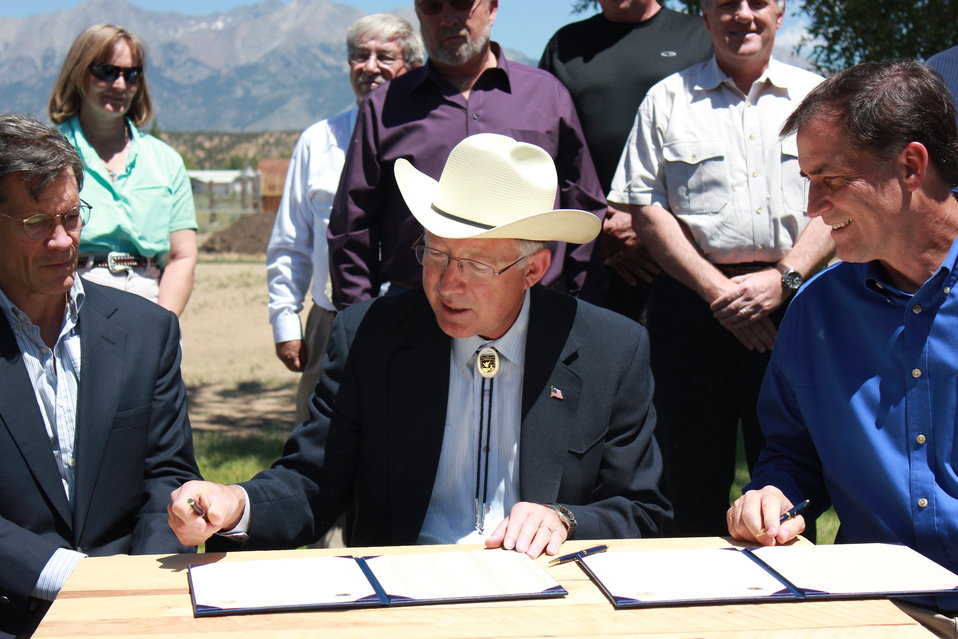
Historic Conservation Easement in Sangre de Cristo Mountains